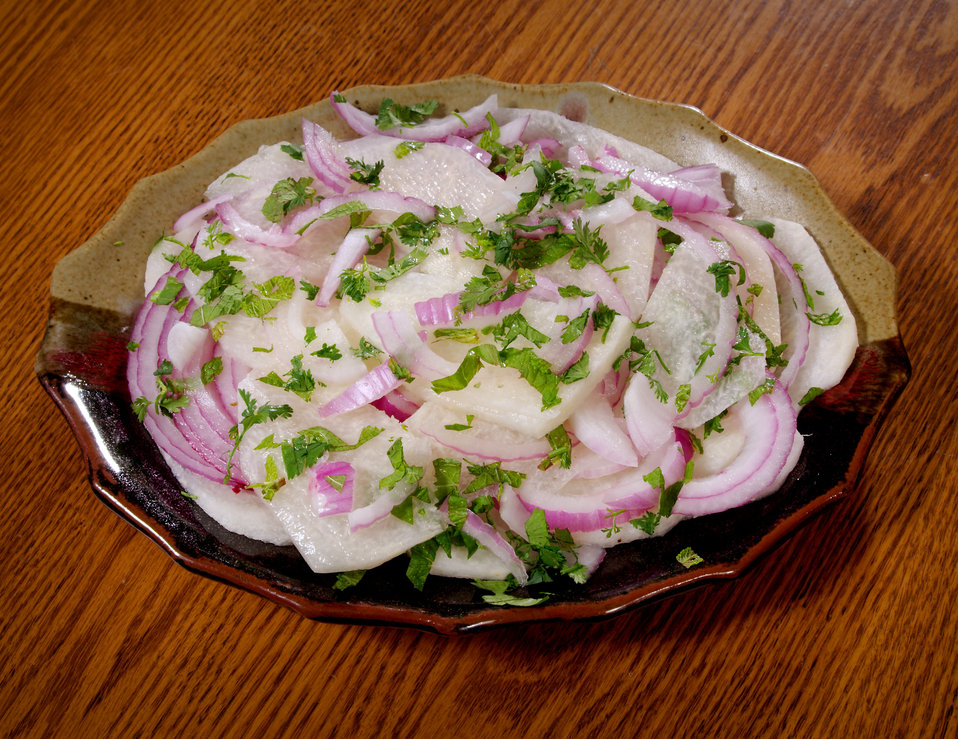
This side dish consists of a very simple, yet very nutritious recipe including onion, cilantro, olive oil, and a touch of sea salt to taste.